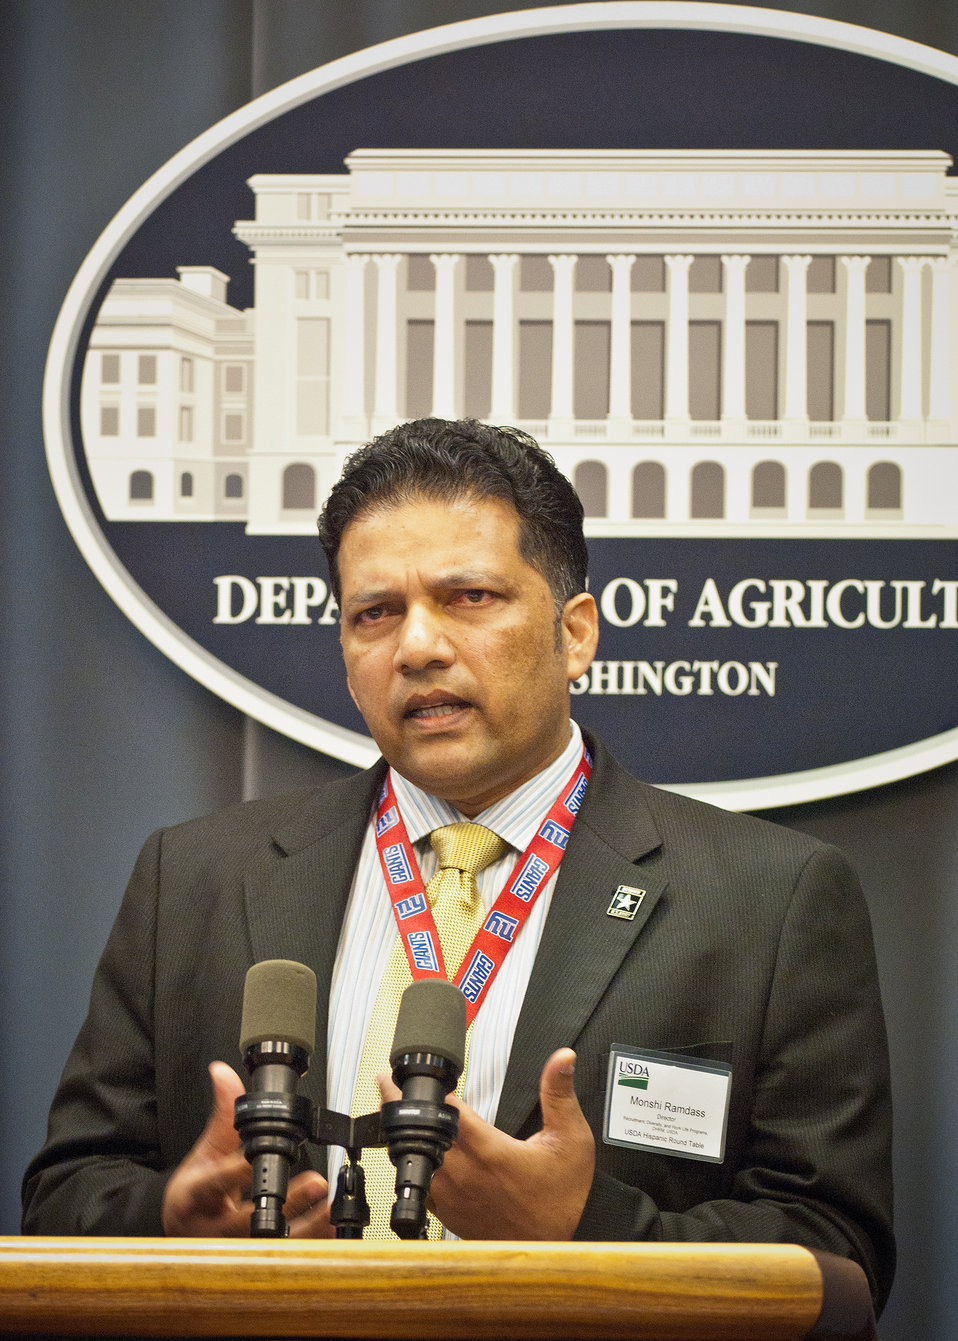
Monshi Ramdass, Director, Recruitment, Diversity and Work Life Programs, Office of Human Resources Management explained the Diversity Road Map at the United States Department of Agriculture Hispanic Roundtable at the United States Department of Agriculture, Monday, December 5, 2011 in Washington, DC. The roundtable focused on recruitment, retention and employee development for the purpose of developing the USDA Hispanic recruitment Plan. The roundtable hosted several national Hispanic partners and recognized USDA Hispanic organizations and associations.